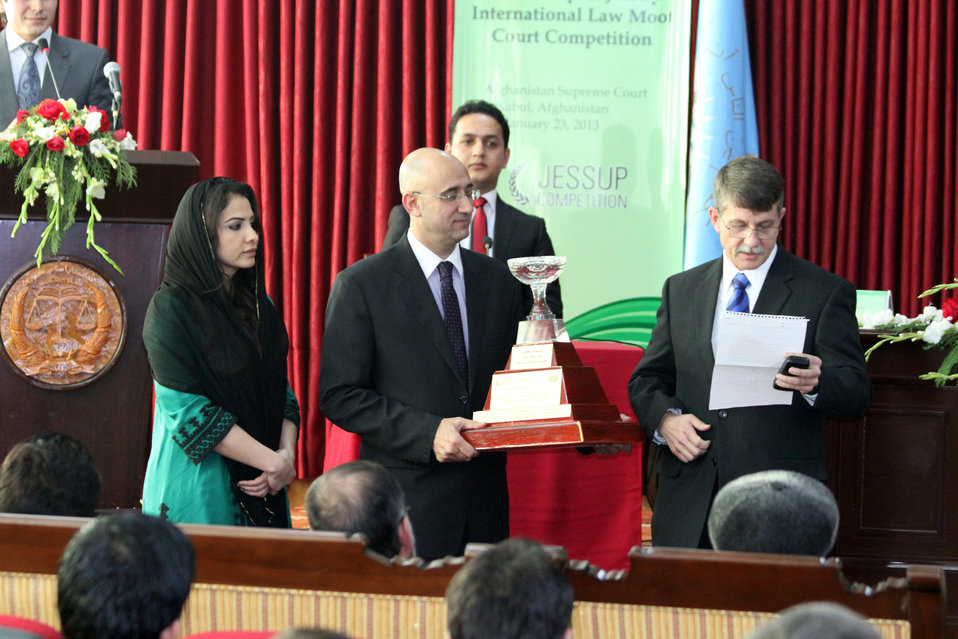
Afghanistan Final National Round of the 2013 Philip C.Jessup International Law Moot Court Competition